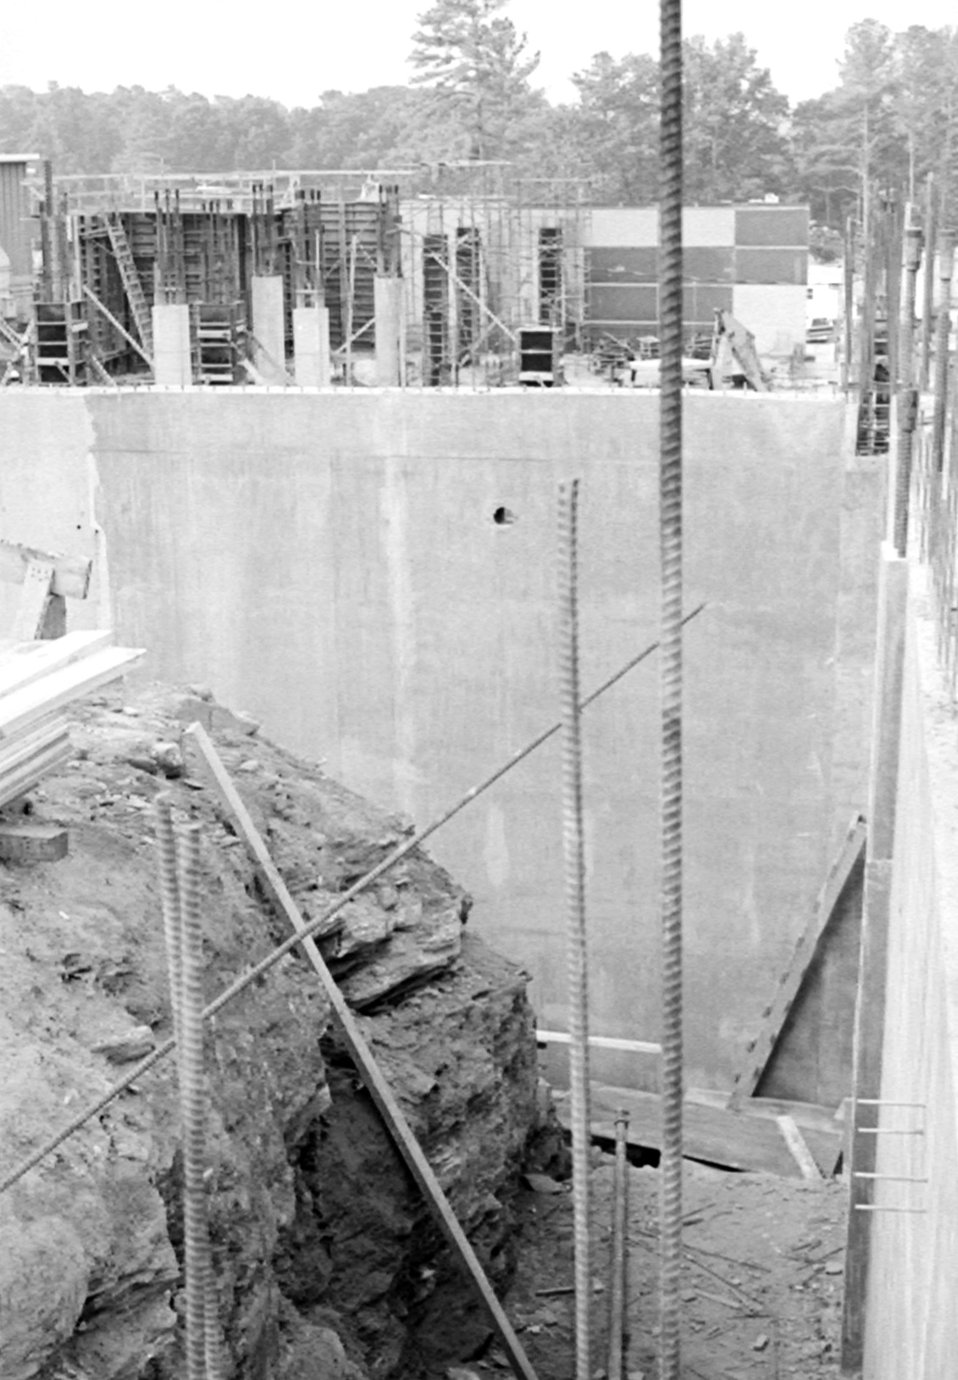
A photograph taken during construction of the CDC maximum containment virology building Atlanta, Georgia.